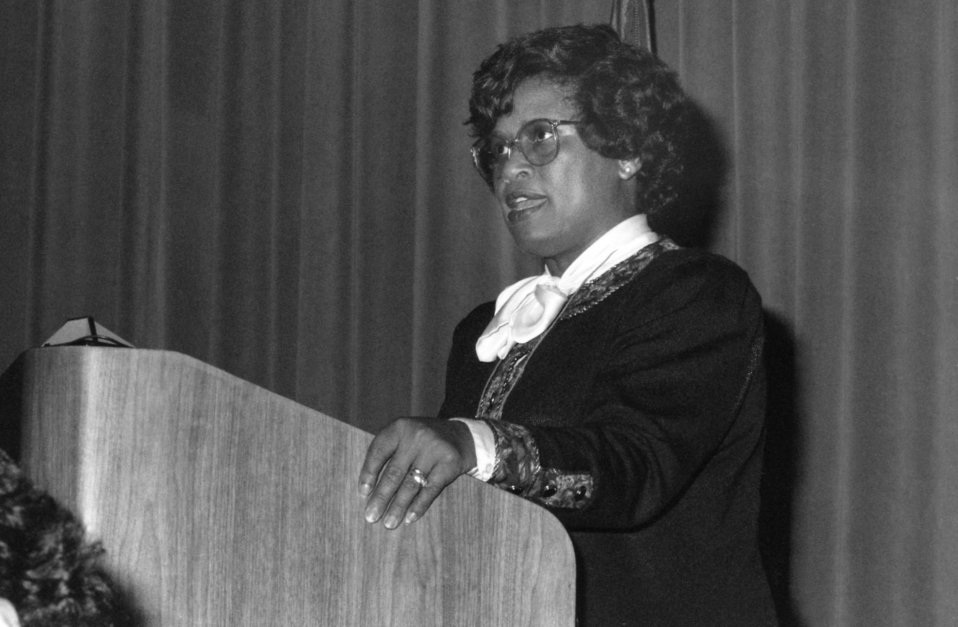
Arkansas Surgeon General Joycelyn Elders, later the U.S. Surgeon General (1993 - 1994), is shown here addressing Centers for Disease Control staff at the annual Joseph W. Mountin Lecture in November, 1991.